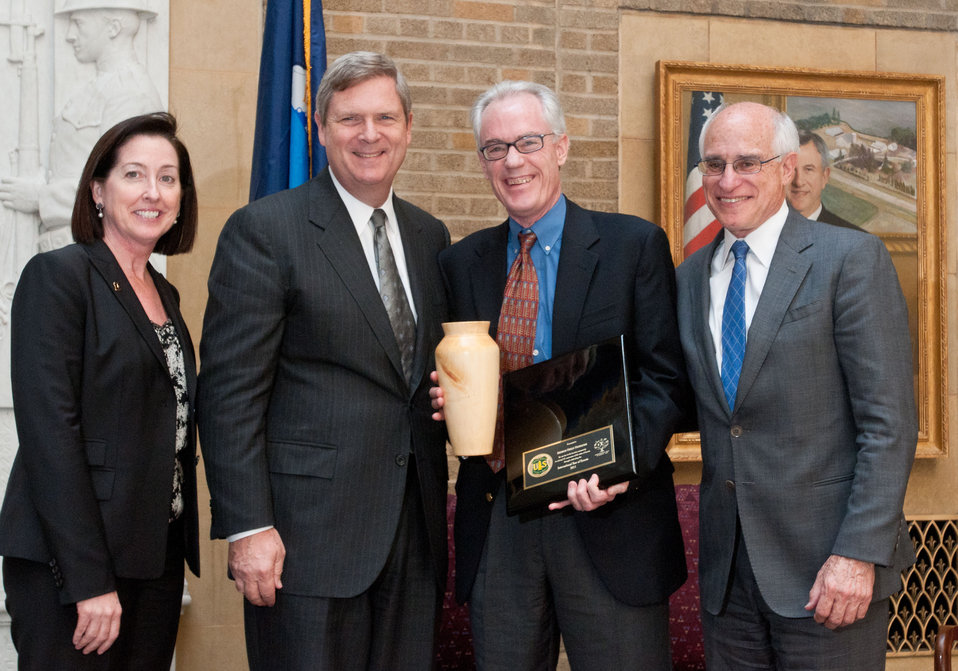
Forest Service Associate Chief Mary Wagner (left), Agriculture Secretary Tom Vilsack (second from left), and Undersecretary for Natural Resources and Environment Harris Sherman (right) present the award to the American Forest Foundation President and CEO Tom Martin (second from right) for the foundation’s 'service to the forestry community in raising awareness of the value of forests through celebrating the International Year of Forests (IYOF) 2011,' on Friday, June 3, 2011 on the Patio of the Whitten Building, U.S.Department of Agriculture in Washington, DC.